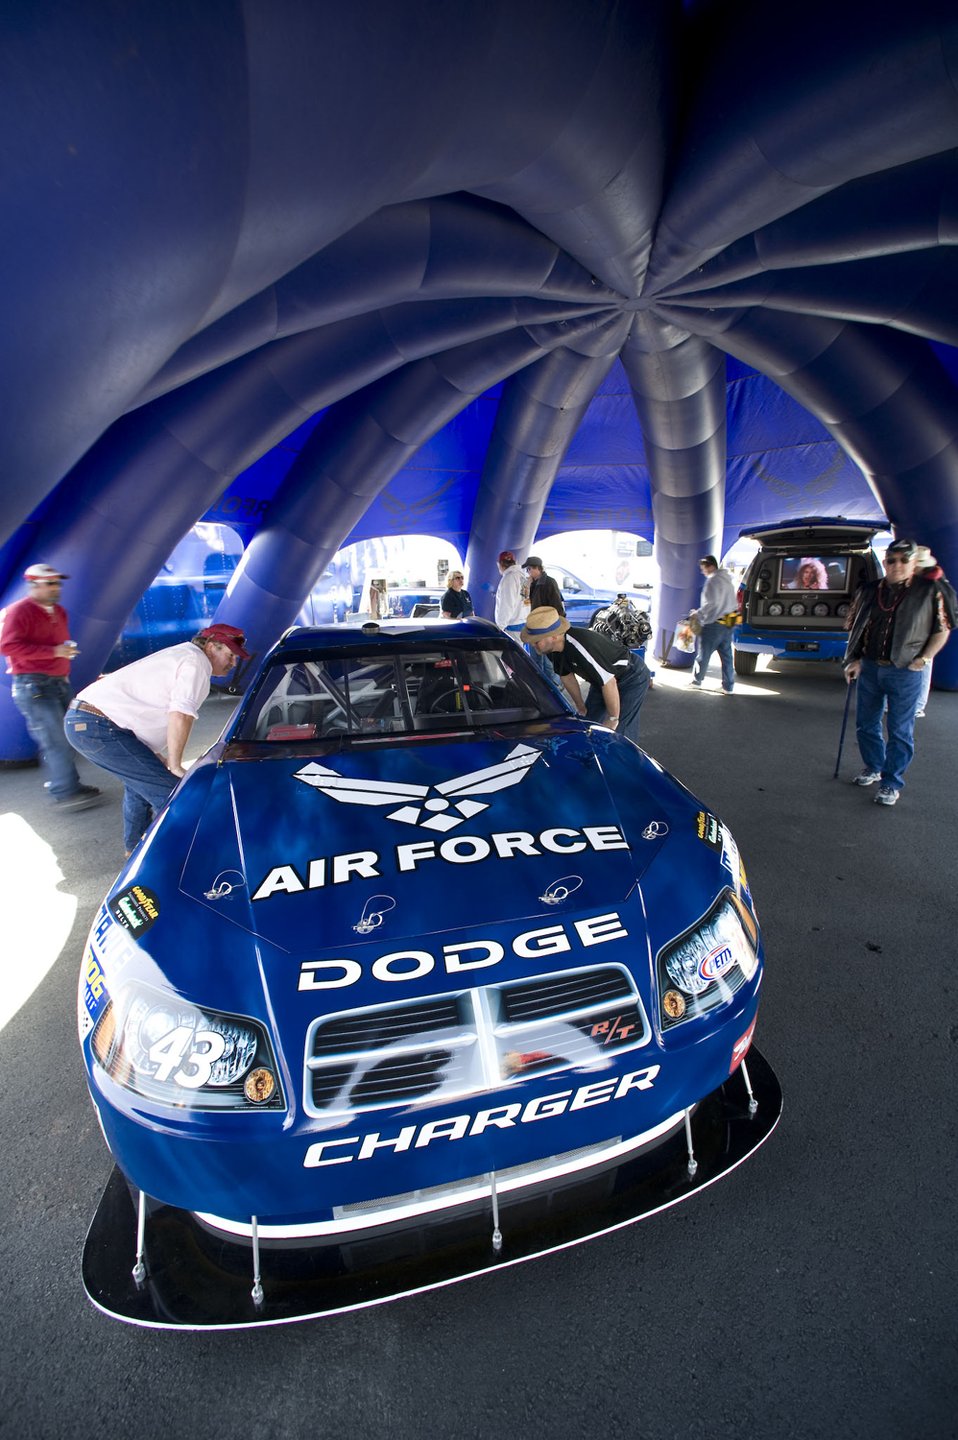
Air Force teams with NASCAR to aid recruiting

Race fans view the new Air Force sponsored No. 43 Dodge Feb. 28 at the Las Vegas Motor Speedway in Nevada. The Air Force paint scheme will be on the track in 2009 at Dover International Speedway, Del., Talledega Superspeedway, Ala., Daytona International Speedway, Fla., and Lowes Motor Speedway in Charlotte, N.C.